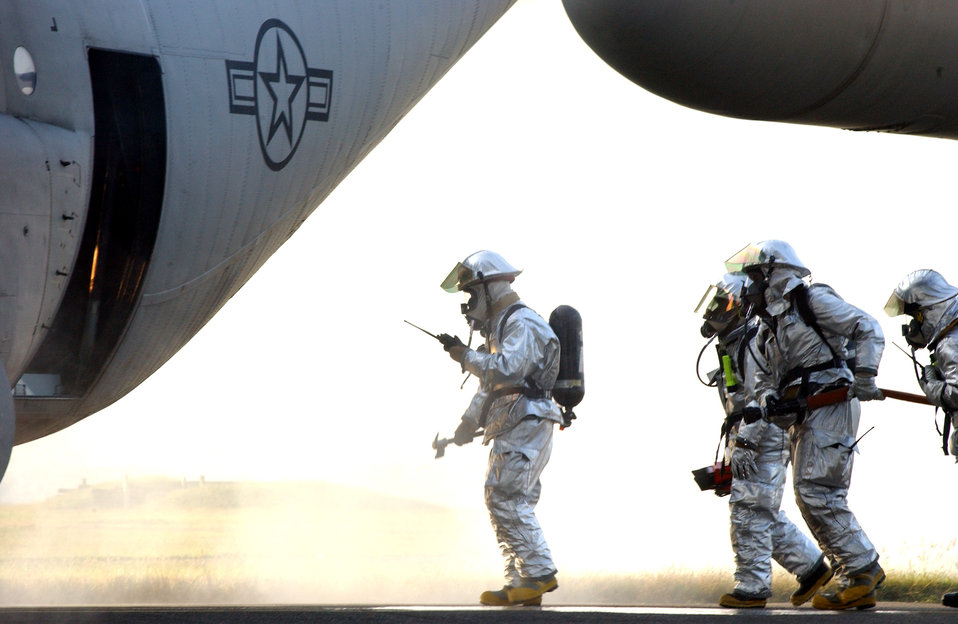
Simulated fire

YOKOTA AIR BASE, Japan (AFPN) -- Firefighters simulate battling a fire after a simulated plane crash during a full spectrum threat response exercise here. The exercise sharpens Airmen's abilities to respond to aircraft accidents. The firefighters are with the 374th Civil Engineering Squadron.